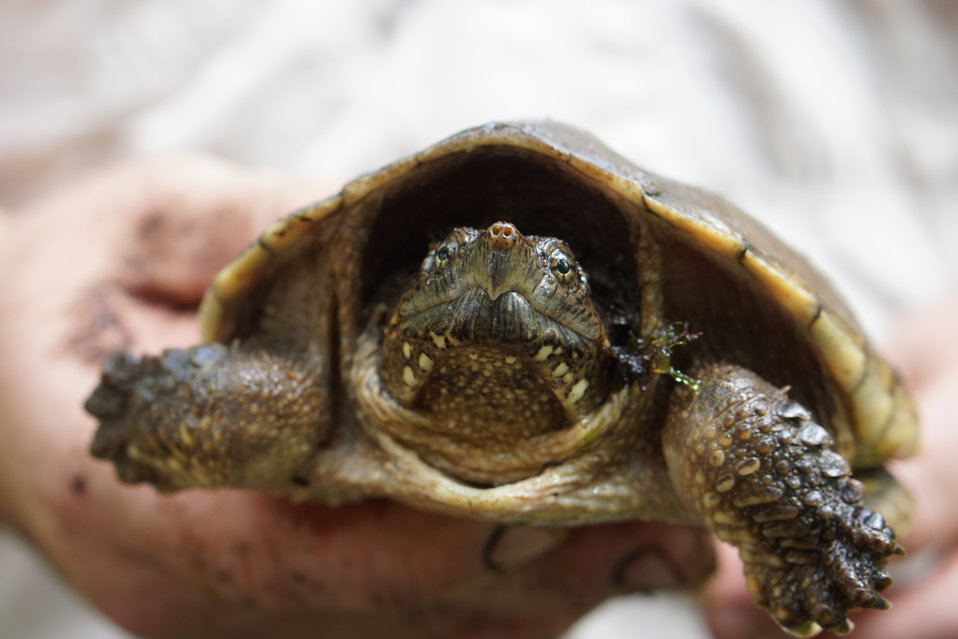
Up-close view of a snapping turtle

In May, bog conservationists from Tennessee, North Carolina, and Georgia convened in the north Georgia mountains for the spring, 2014 meeting of the Bog Learning Network. The event provided an opportunity for biologists to see, first hand, the result of management efforts at two north Georgia bogs. More importantly, the outings provided an opportunity to share innovative approaches to bog management, such as the role of the Georgia Plant Conservation Alliance in conserving rare plants and coordinating a cadre of volunteers to work on bog management.

The Bog Learning Network was convened in the winter of 2013 as a way to bring together people working for bog conservation across the Southern Appalachians. Southern Appalachian bogs are one of North America’s rarest habitats and home to many rare plants and animals.